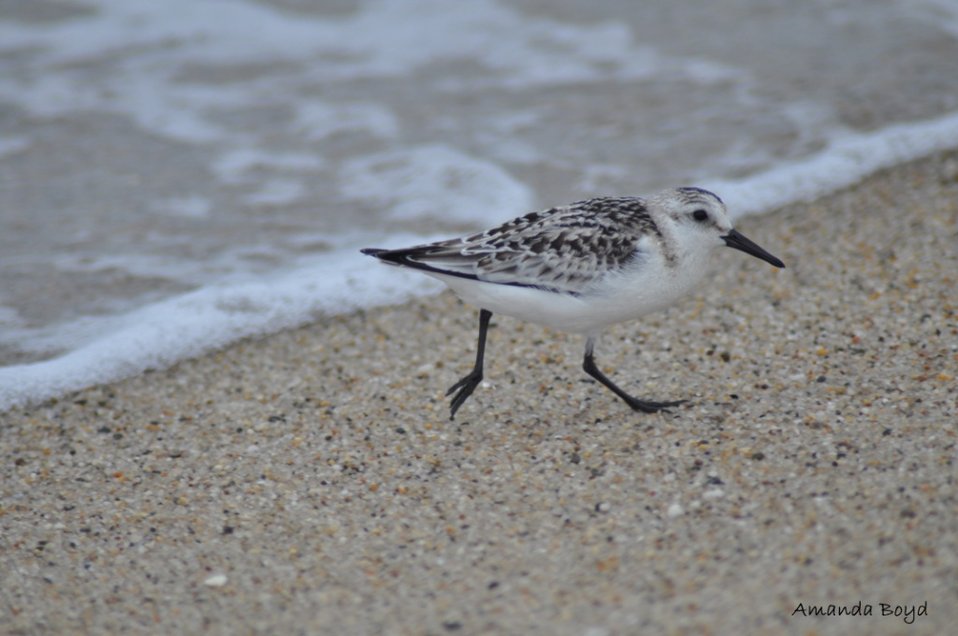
sanderling

Nantucket National Wildlife Refuge